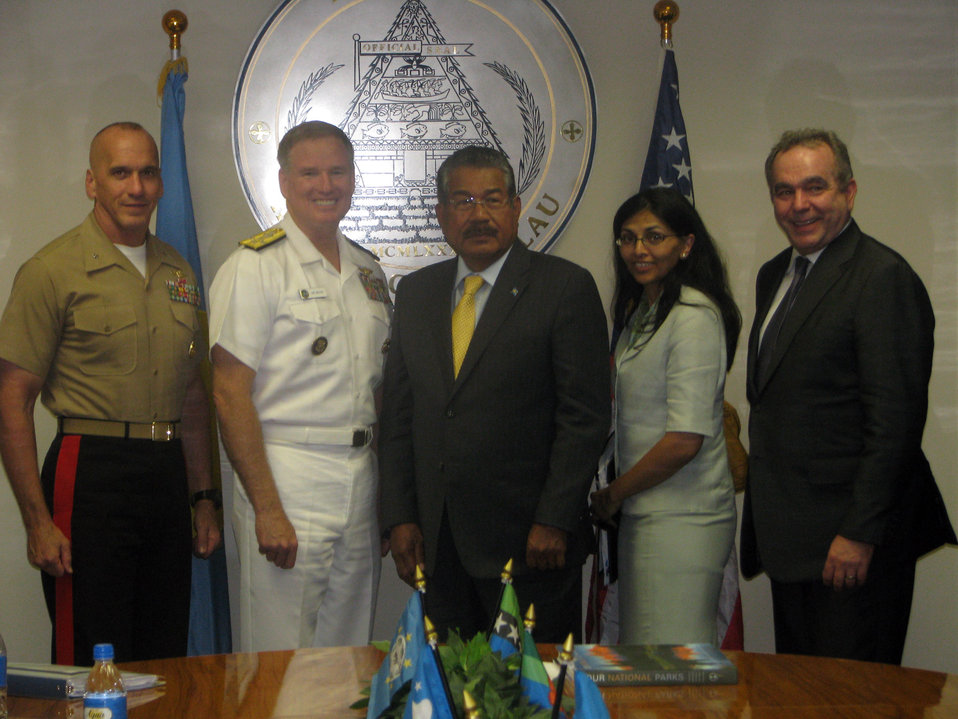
Assistant Secretary Campbell Poses for a Photo With Palau President Toribiong

Assistant Secretary of State for East Asian and Pacific Affairs Kurt Campbell, right; and the U.S. delegation pose for a photo with President Johnson Toribiong of Palau, center, in Ngerulmud, Palau, on June 30, 2011. The delegation, which is visiting nations throughout the South Pacific to enhance bilateral political, economic, and security relations in the region, includes Adm. Patrick Walsh, commander of U.S. Pacific Fleet, left center; Office of the Secretary of Defense South/Southeast Asia Principal Director, Marine Corps Brig. Gen. Richard Simcock, left; and U.S. Agency for International Development (USAID) Assistant Administrator Nisha Biswal, right center.